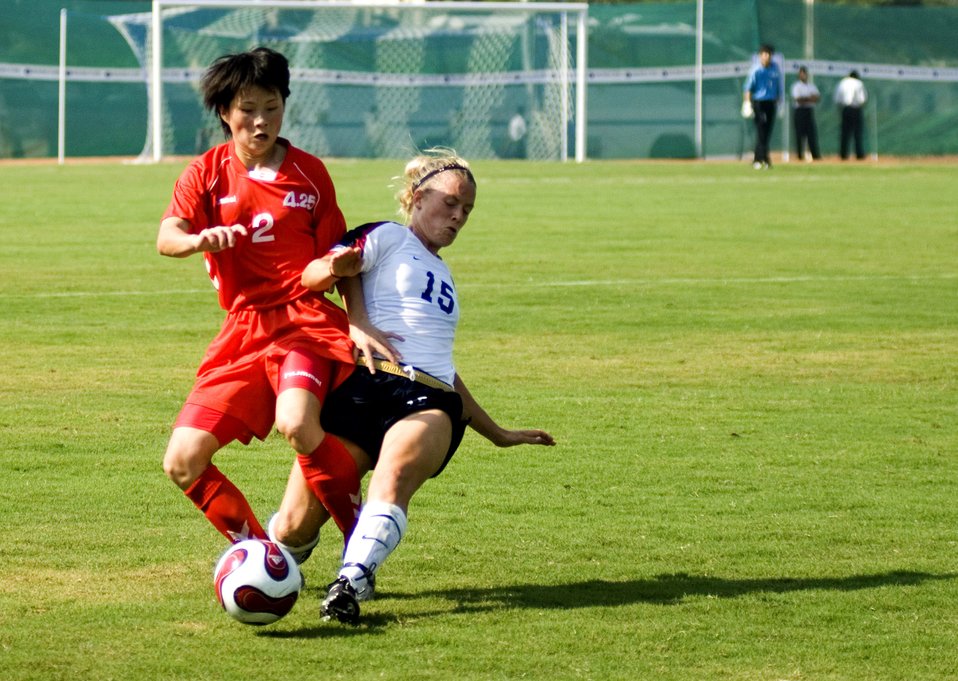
4th CISM World Military Games

Second Lt. Yong Ok Jang from the Democratic Peoples Republic of Korea and U.S. Army Capt. Randee Farrell fight for possession of the ball during the Military World Games' first women's soccer match in Hyderabad, India, Oct. 14. DPR Korea defeated the U.S. team 4-0. The Conseil Internationale du Sport Militaire's Military World Games event is the largest international military Olympic-style event in the world. In this year's fourth edition of the games, 103 countries and more than 5,000 athletes are competing Oct. 14 to 21 in boxing, diving, soccer, handball, judo, military pentathlon, parachuting, sailing, shooting, swimming, volleyball and track and field. The purpose of the Military World Games is to promote